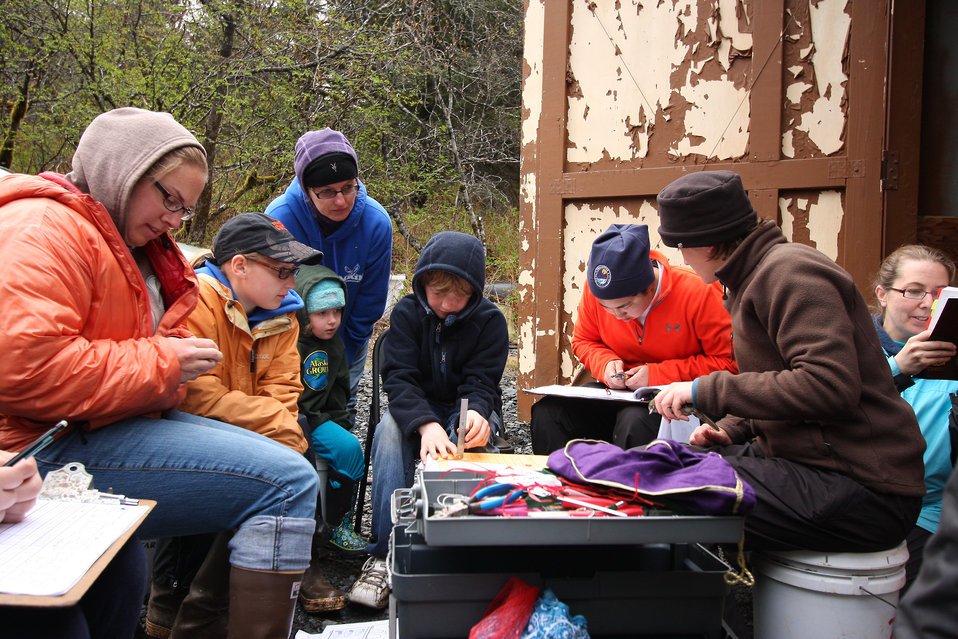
Volunteers learn to identify landbirds at a banding station

Photo Credit: Lisa Hupp/USFWS
Source: Kodiak NWR